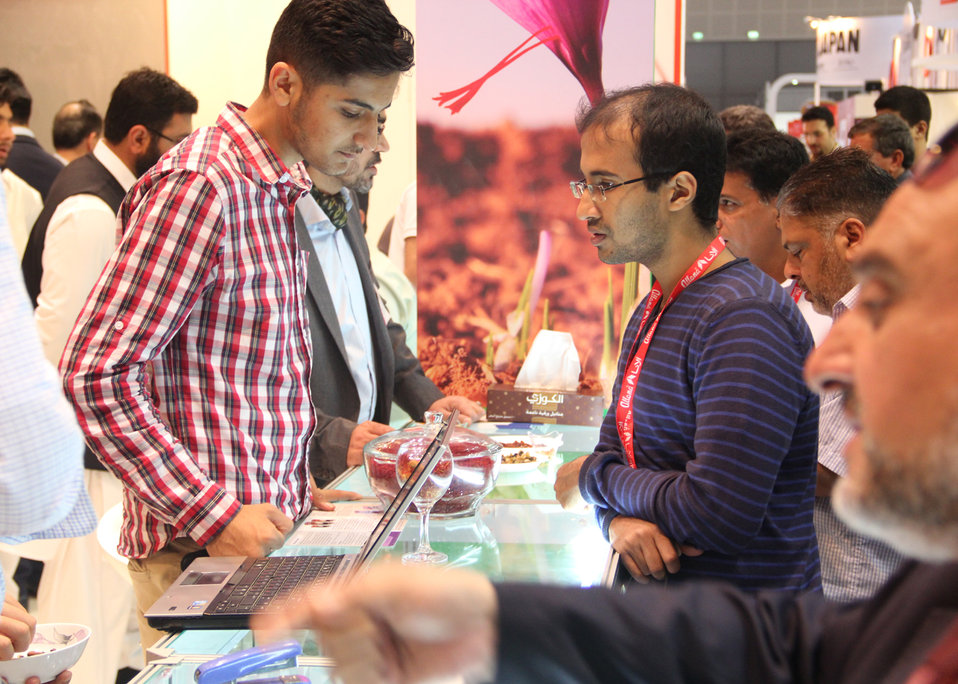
A visitor inspects Afghanistan’s saffron, which is grown mainly in Herat province. Saffron is in high demand and is often regarded as the world’s most expensive spice. Afghan traders signed deals worth more than $2 million dollars during the first two